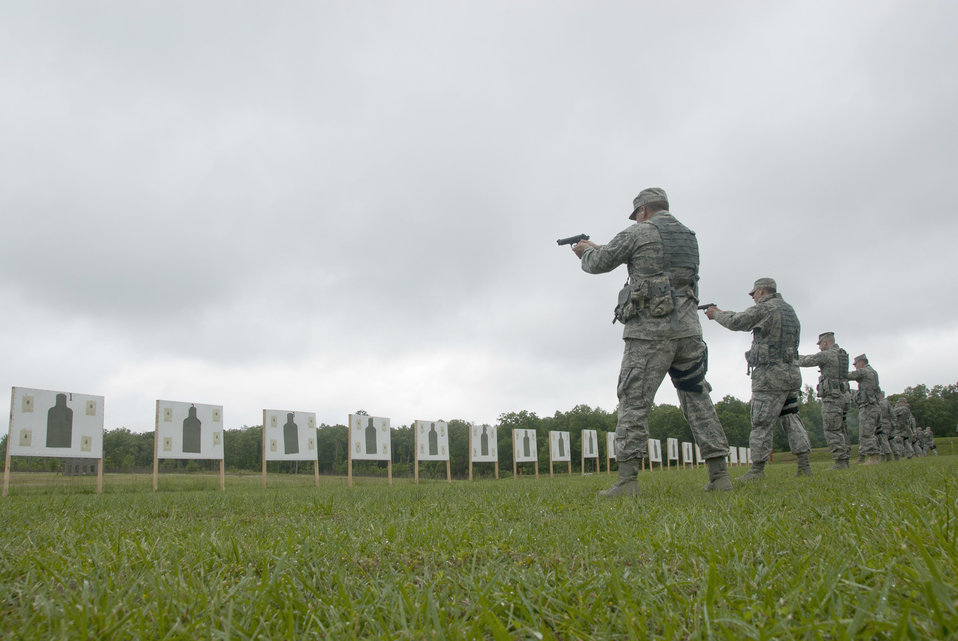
Heavy arms training

Members of the 134th Security Forces Squadron re-qualify on the Beretta M9 May 16, 2011, at Arnold Air Force Base, Tenn.